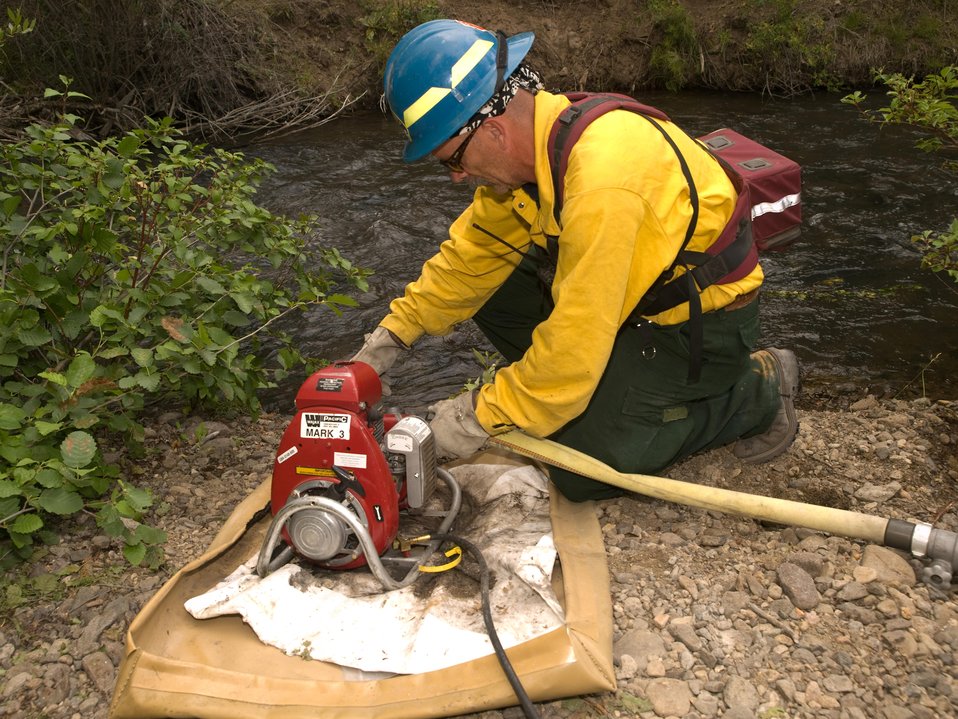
Firefighter uses a Mark III pump at the Lodgepole Fire. The Lodgepole Fire in the Salmon-Challis National Forest near Challis, ID began on Jul. 20, 2013 by lightning has consumed approximately 13,700 acres and is approximately 15% contained.